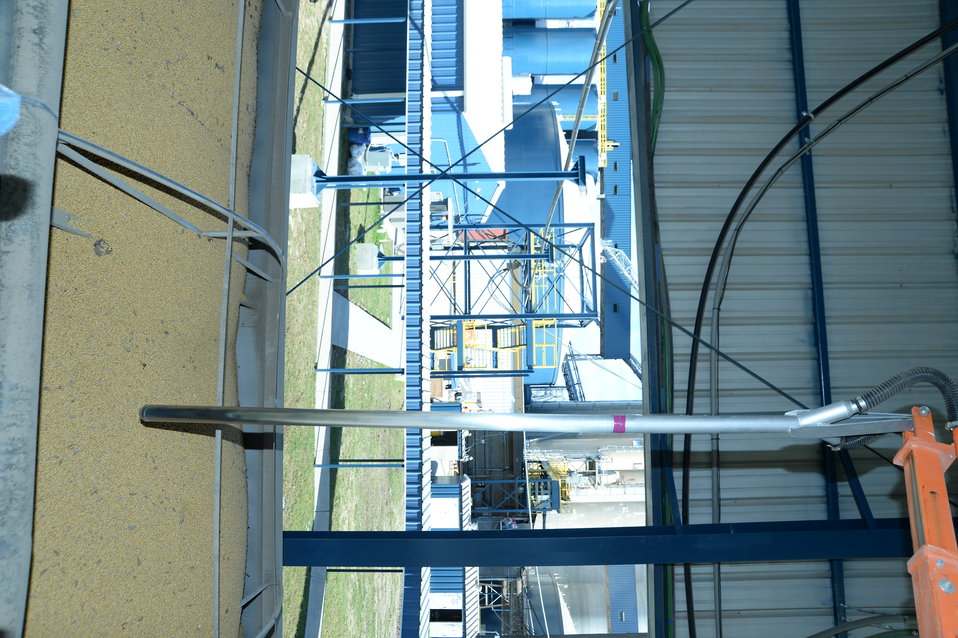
A sample of grain is removed from a barge for testing at the U.S. Department of Agriculture’s (USDA) Grain Inspection, Packers and Stockyards Administration (GIPSA) Federal Grain Inspection Service (FGIS) laboratory in New Orleans, LA on Tuesday, Nov. 19, 2013.